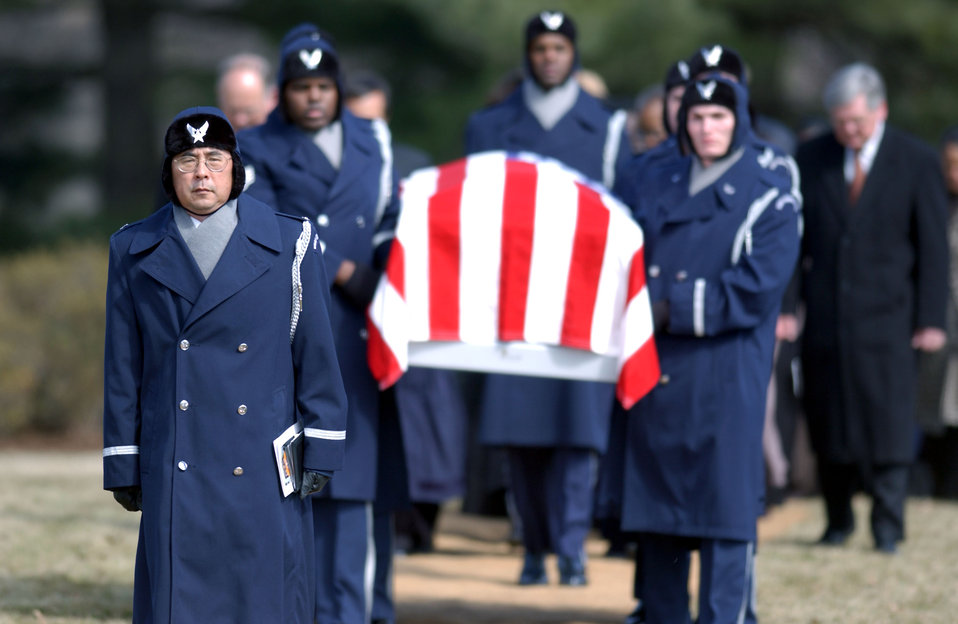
Tribute to a hero

FILE PHOTO -- Chaplain (Col.) Richard K. Hum marches in front of U.S. Honor Guard members carrying the casket of shuttle astronaut Lt. Col. Michael Anderson on March 7 at Arlington National Cemetery.